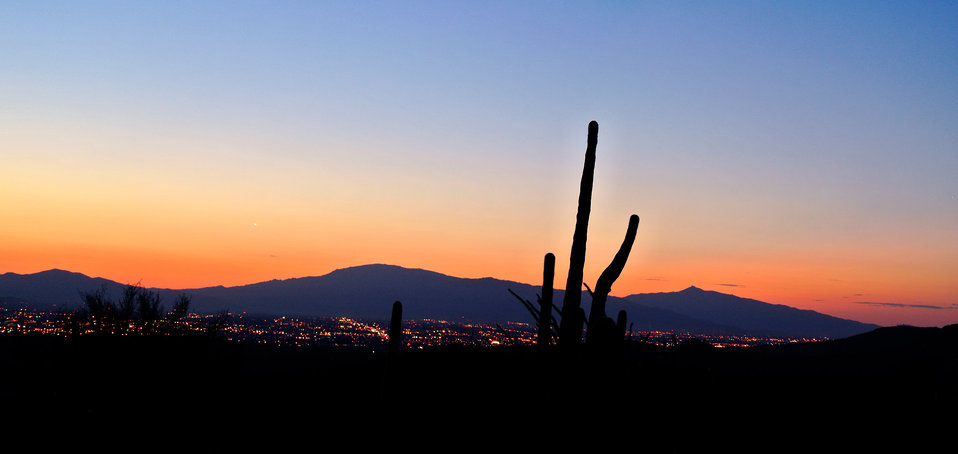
Tucson sunrise panorama.